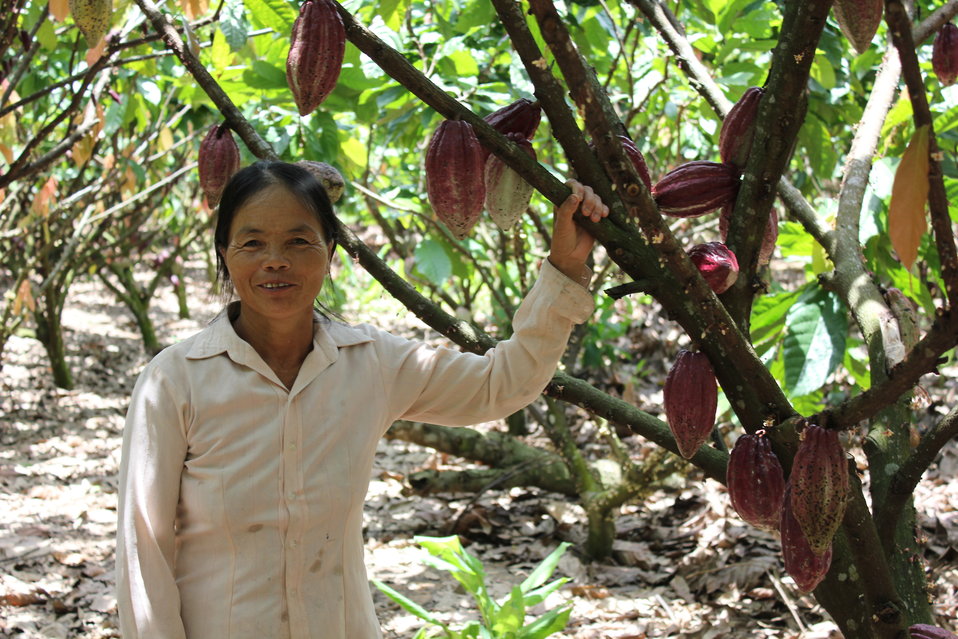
USAID supports cocoa cultivation in central Vietnam

Ea Kar District, Dak Lak Province. August 7, 2013.